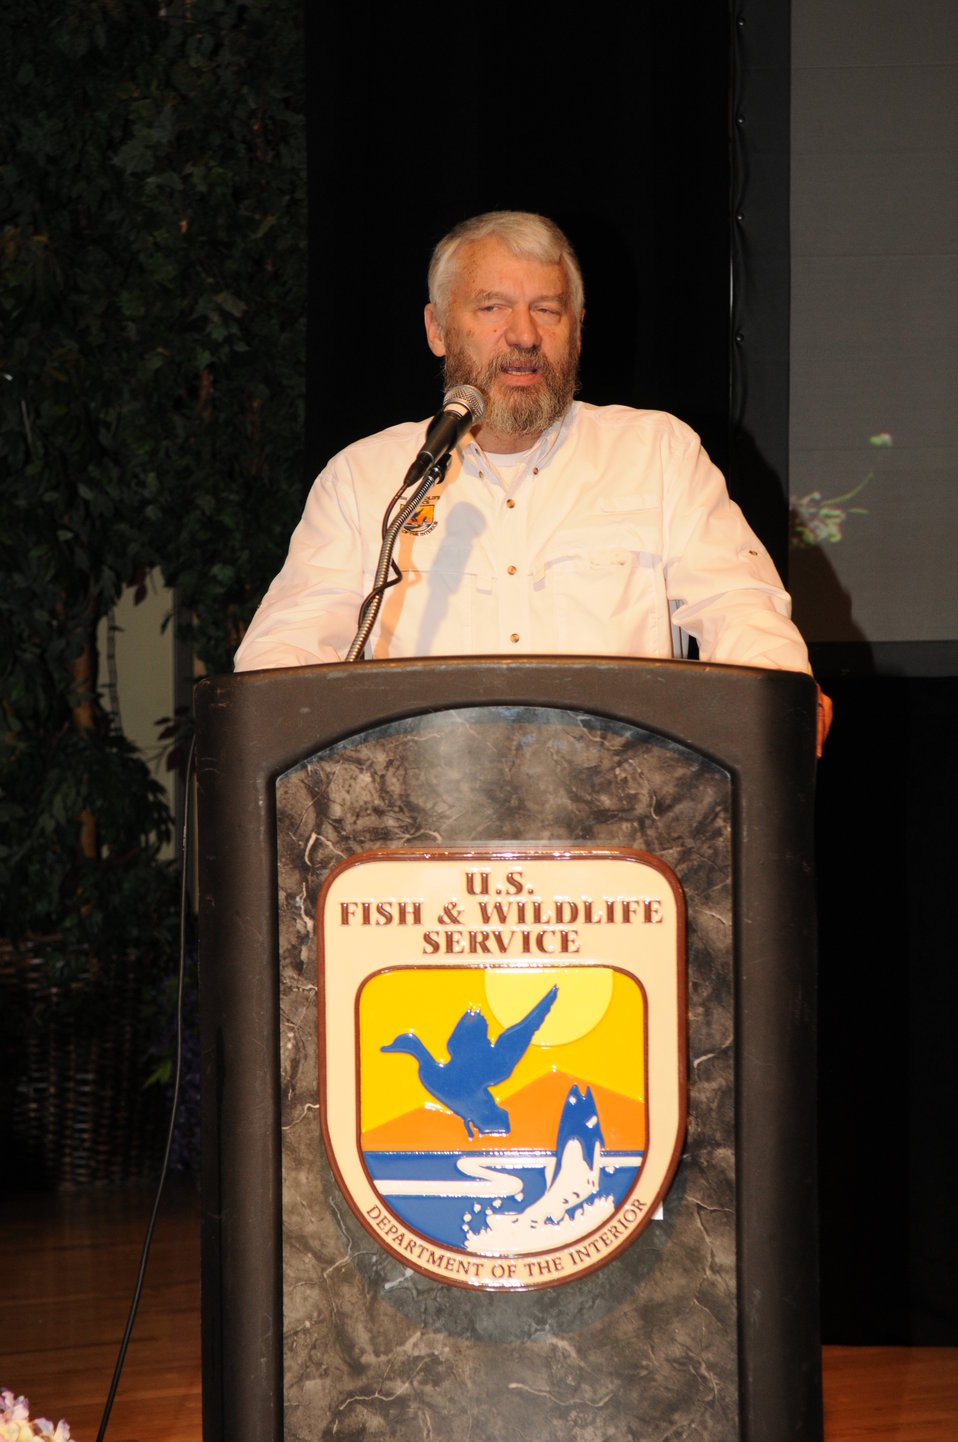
Day 2 Opening Remarks

The U.S. Fish & Wildlife Service sponsored the 2012 Federal Duck Stamp Art Contest September 28 and 29 in Ogden, Utah, at Weber State University. A panel of five judges was responsible for choosing the art work used to design the 2013-2014 Migratory Bird Hunting and Conservation Stamp.